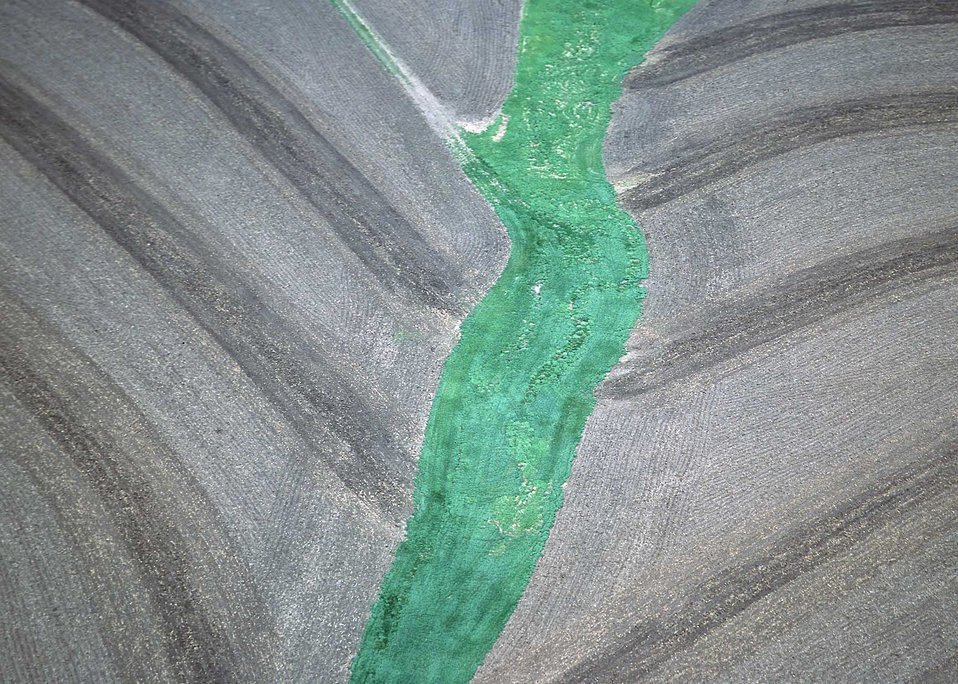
Aerial view on contour terraces and grassed waterways for erosion control. Kansas.